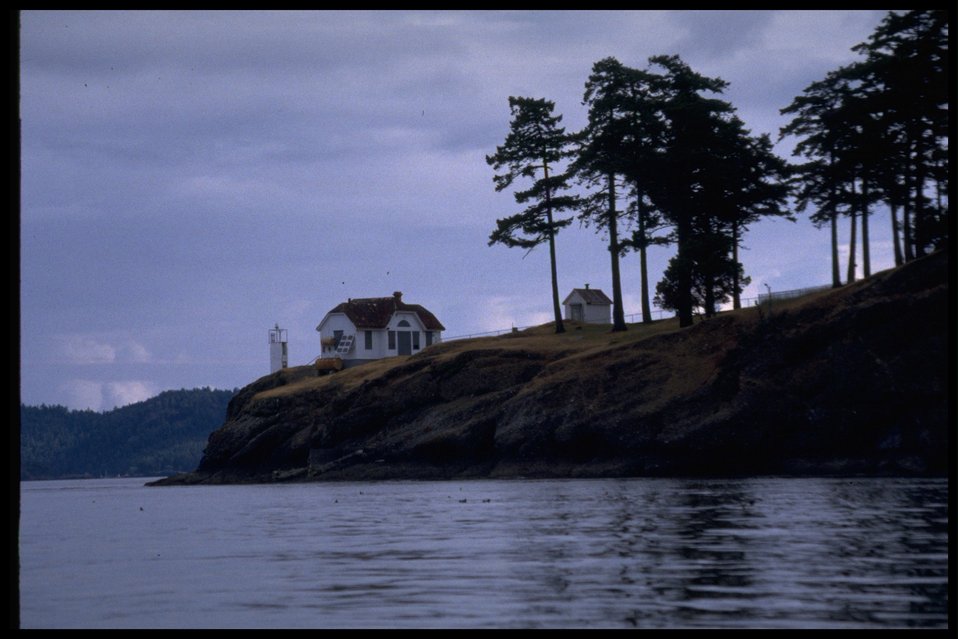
Turn Point from water with light station and buildings. Series of 17 photos.